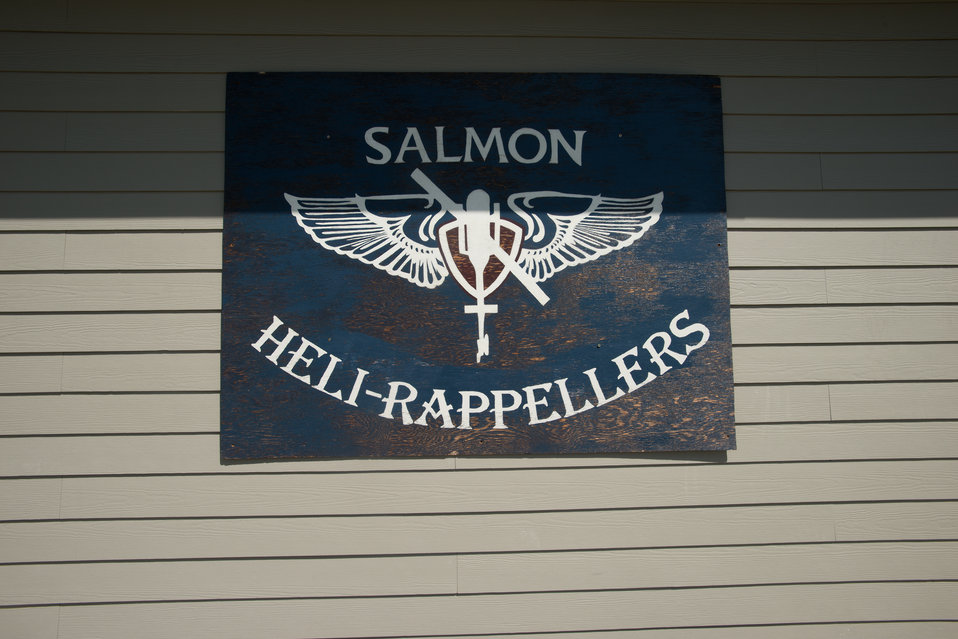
Past logo of the Salmon Heli-Rappellers hangs on a back wall of their new main facility on Wednesday, May 14, 2014, when veteran wildland firefighter rappellers come to train and prepare during the U.S. Department of Agriculture (USDA) U.S. Forest Service (USFS) National Helicopter Rappel Program’s Rappel Academy at Salmon Air Base, in Salmon, ID from May 12-15, 2014. 72 veteran rappellers from all over the nation, 30 support staff, and three helicopters with flight crews attend the training at Salmon Air Base. Participants will rappel into the Perreau Creek area. The annual training is delivered in accordance with the National Rappel Operations Guide; strengthen leadership, teamwork, and communications within the rappel community, and produces quality aerial delivered firefighters for use in fire and aviation operations. The USDA Forest Service National Helicopter Rappel Program’s primary mission is initial attack. Rappel crews may be utilized for large fire support, all hazard incident operations, and resource management objectives.